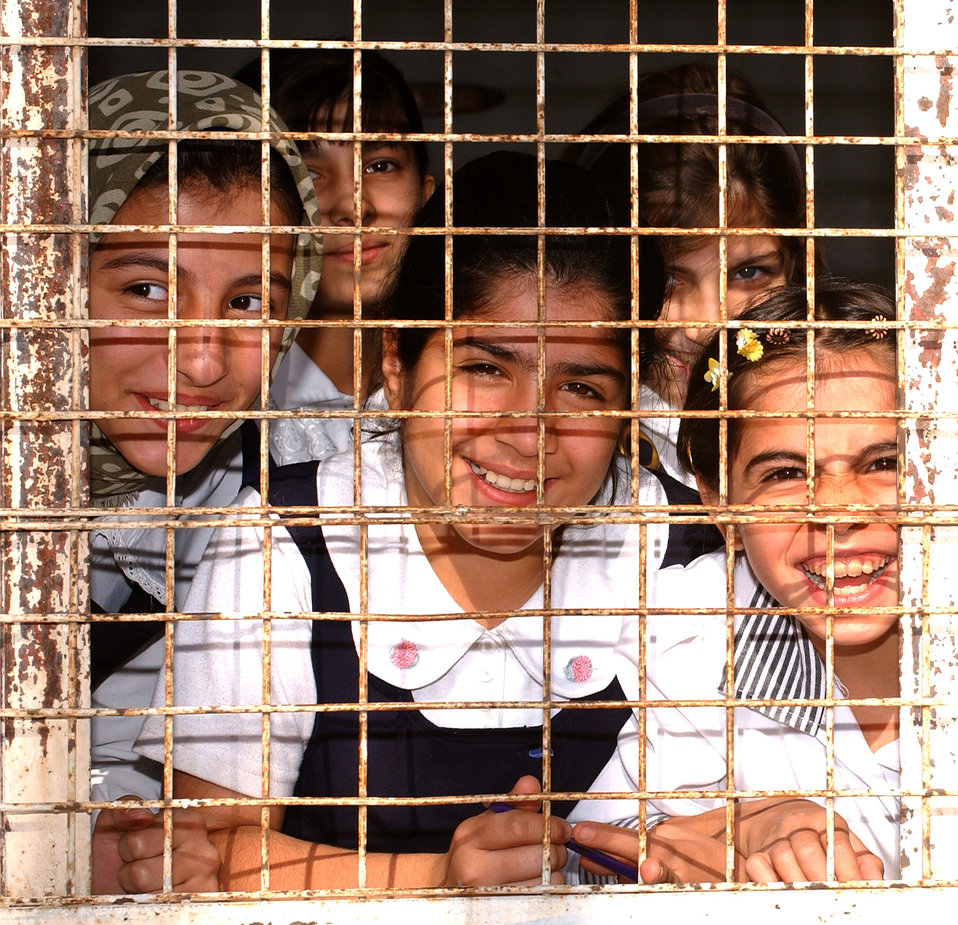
School donations

KIRKUK, Iraq -- Children at Al Ilaf school here greet airmen arriving with educational supplies. The $5,000 in supplies came from voluntary donations of 380th Air Expeditionary Wing airmen at a forward-deployed air base.